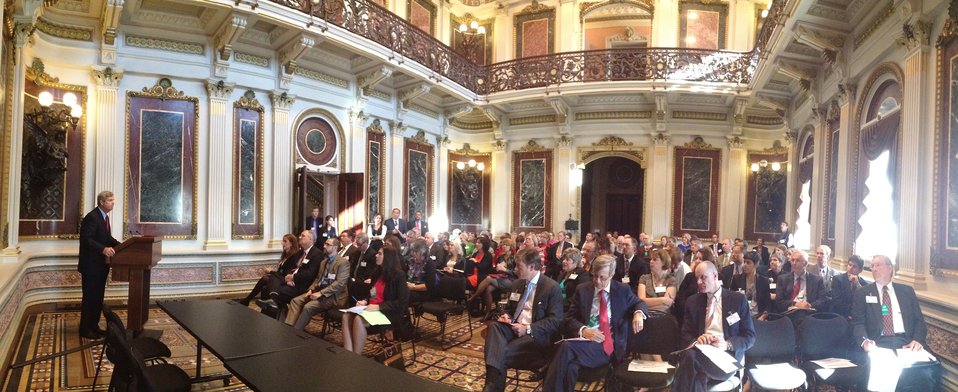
Agriculture Secretary Tom Vilsack addresses the 2nd Annual meeting of the White House Rural Forum concerning Regional Innovation in Rural America at the Executive Office Building in Washington, D.C. on Wednesday, Sep. 18, 2013.